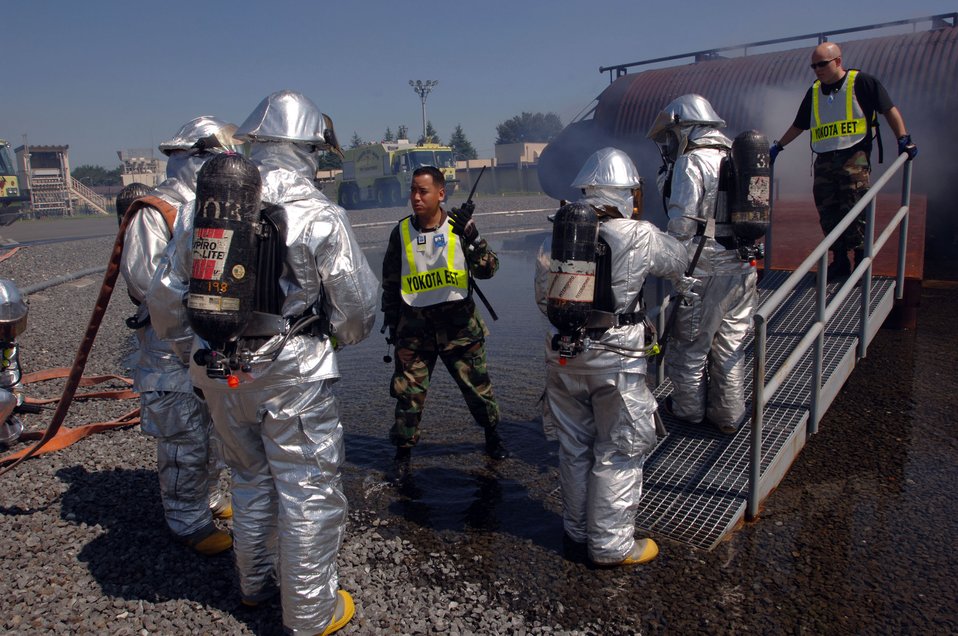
It's hot inside

YOKOTA AIR BASE, Japan -- Firefighters with the 374th Civil Engineer Squadron and exercise evaluators confer after an exercise. The Airmen responded to a